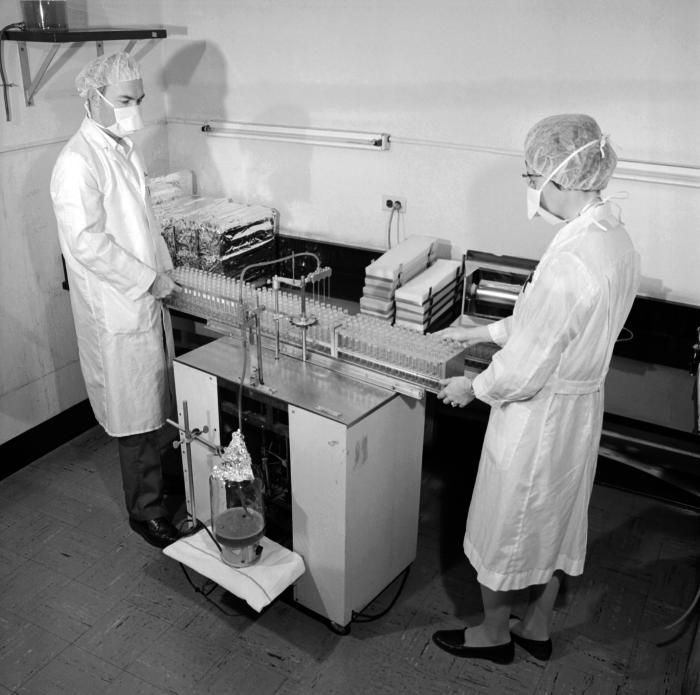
This historic 1967 photograph depicted two laboratory technicians as they were in the process of dispensing cell suspensions, which would be used in the cultivation of primary cell cultures.